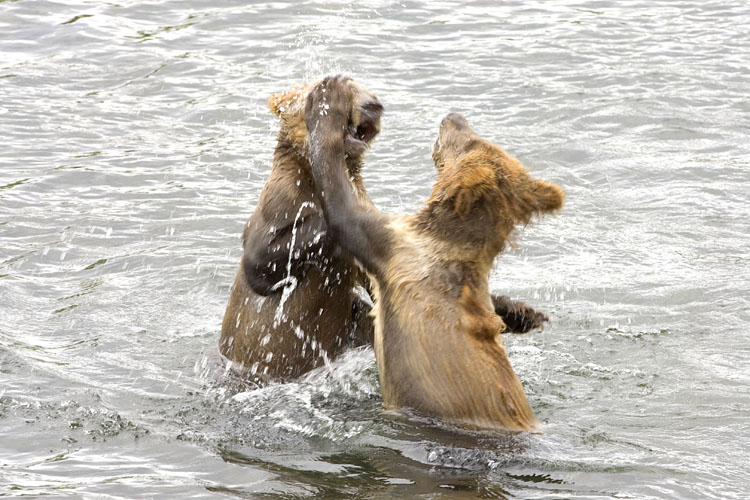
KOD Hildebrand (14)

Kodiak National Wildlife Refuge- Wildlife